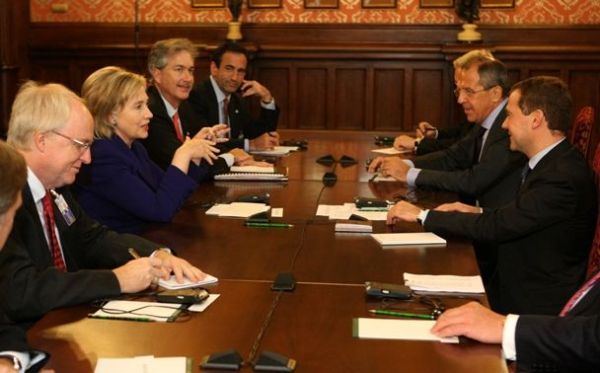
Secretary Clinton With Russian President Medvedev

U.S. Secretary of State Hillary Rodham Clinton meets with Russian President Medvedev in Moscow, Russia, October 13, 2009.